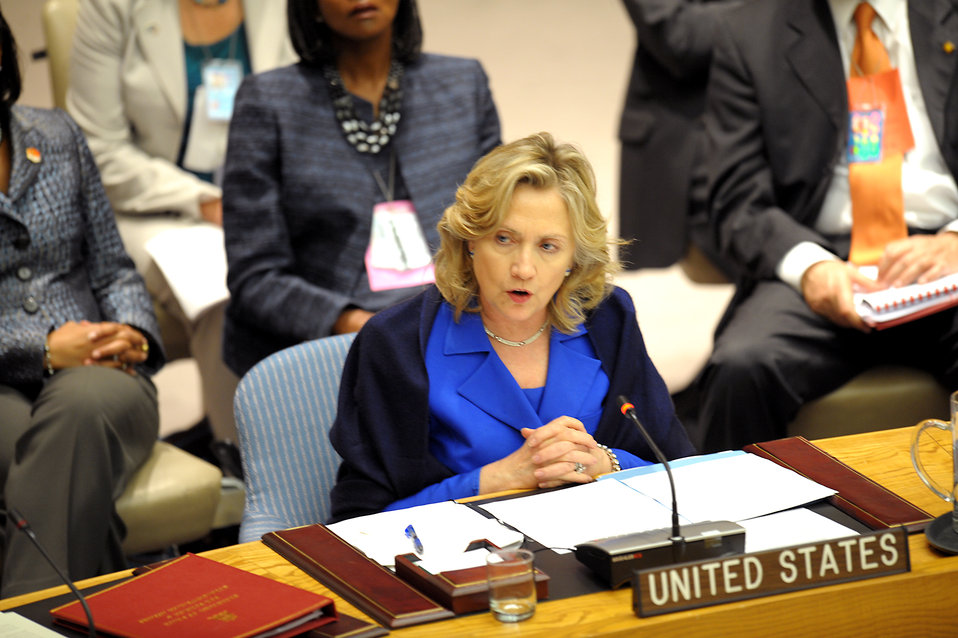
Secretary Clinton Delivers Remarks at the UN Security Council Summit on Peacekeeping

U.S. Secretary of State Hillary Rodham Clinton delivers remarks at the UN Security Council Summit on Peacekeeping at the UN in New York, New York, on September 23, 2010.